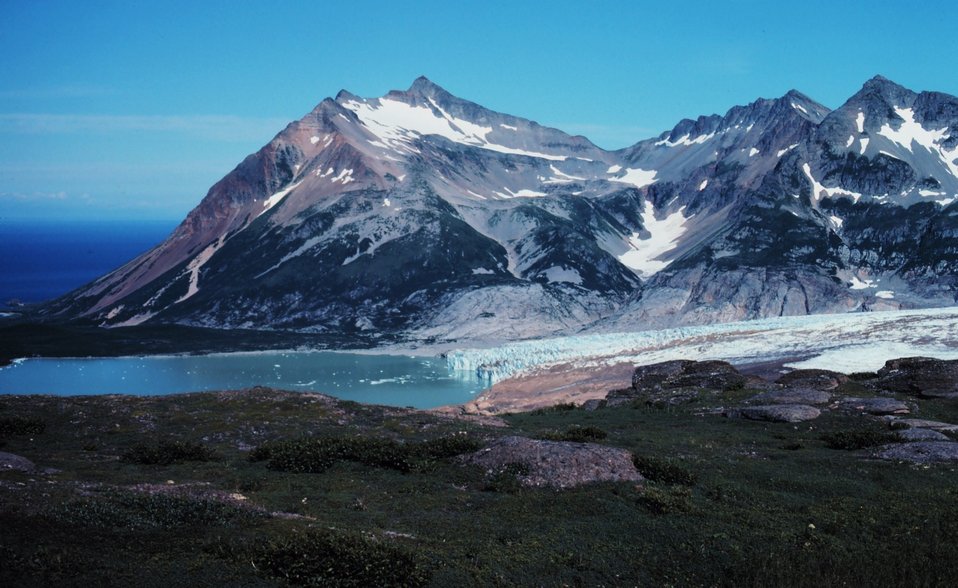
Mountain, glacier, and ocean.